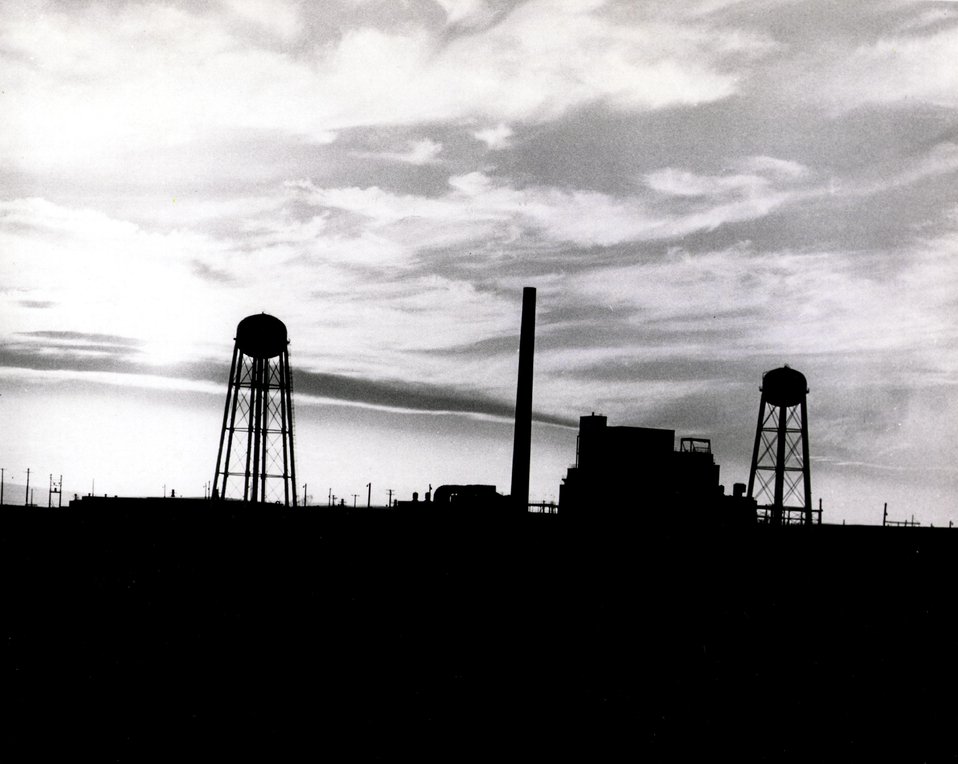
Near the Columbia River in Southeastern Washington State, the setting sun silhouettes one of Hanford's nine plutonium structures. Construction of the first of these light-water-cooled, graphite-moderated reactors was begun in 1943. Circa 1963.